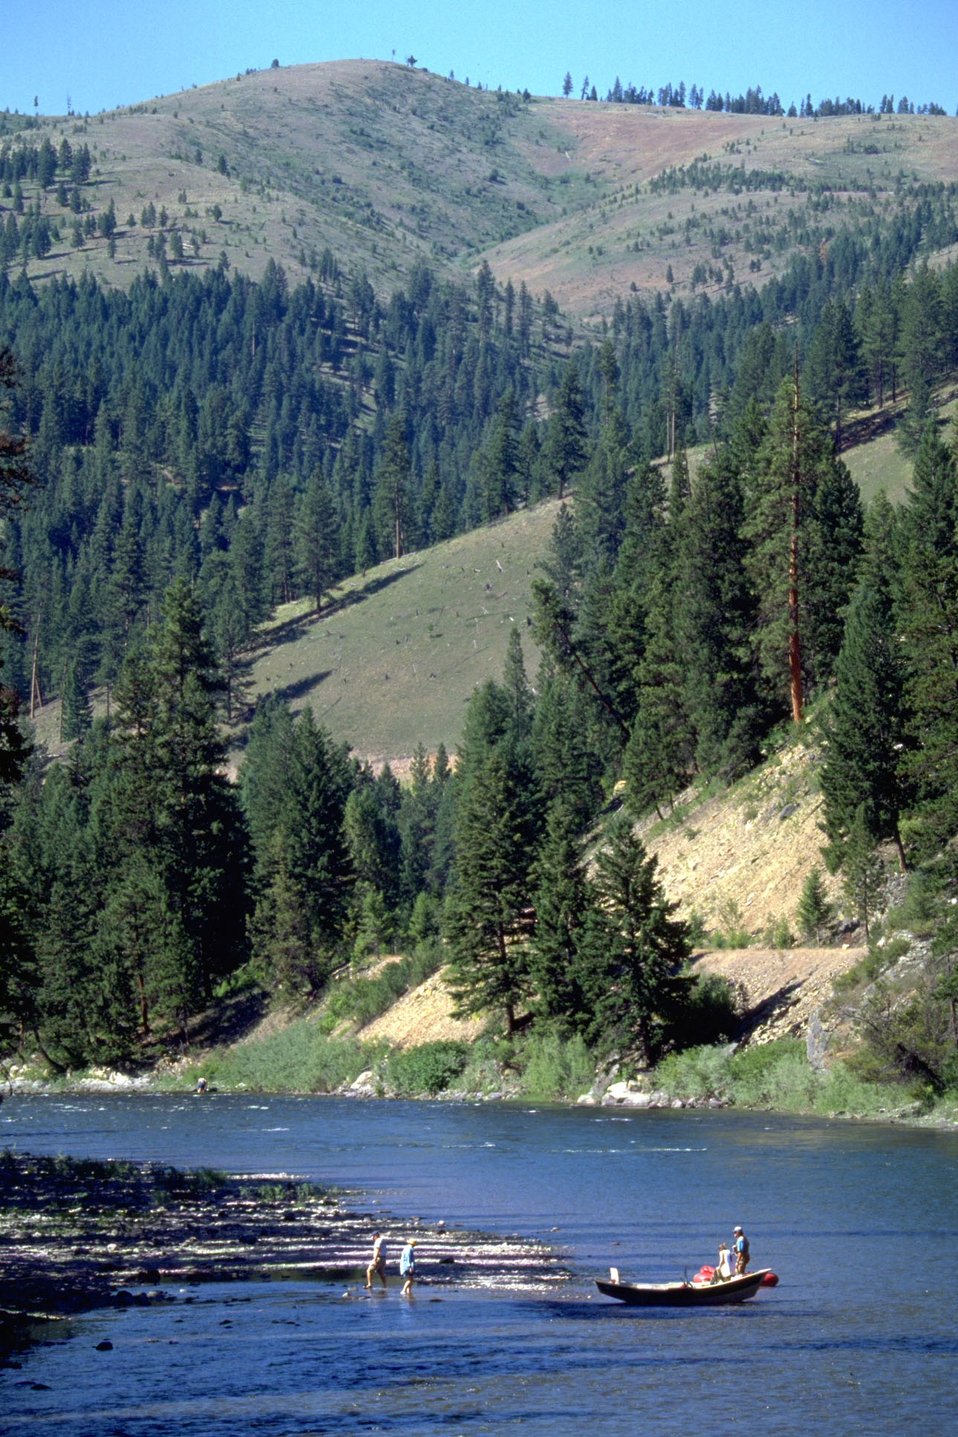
Blackfoot River